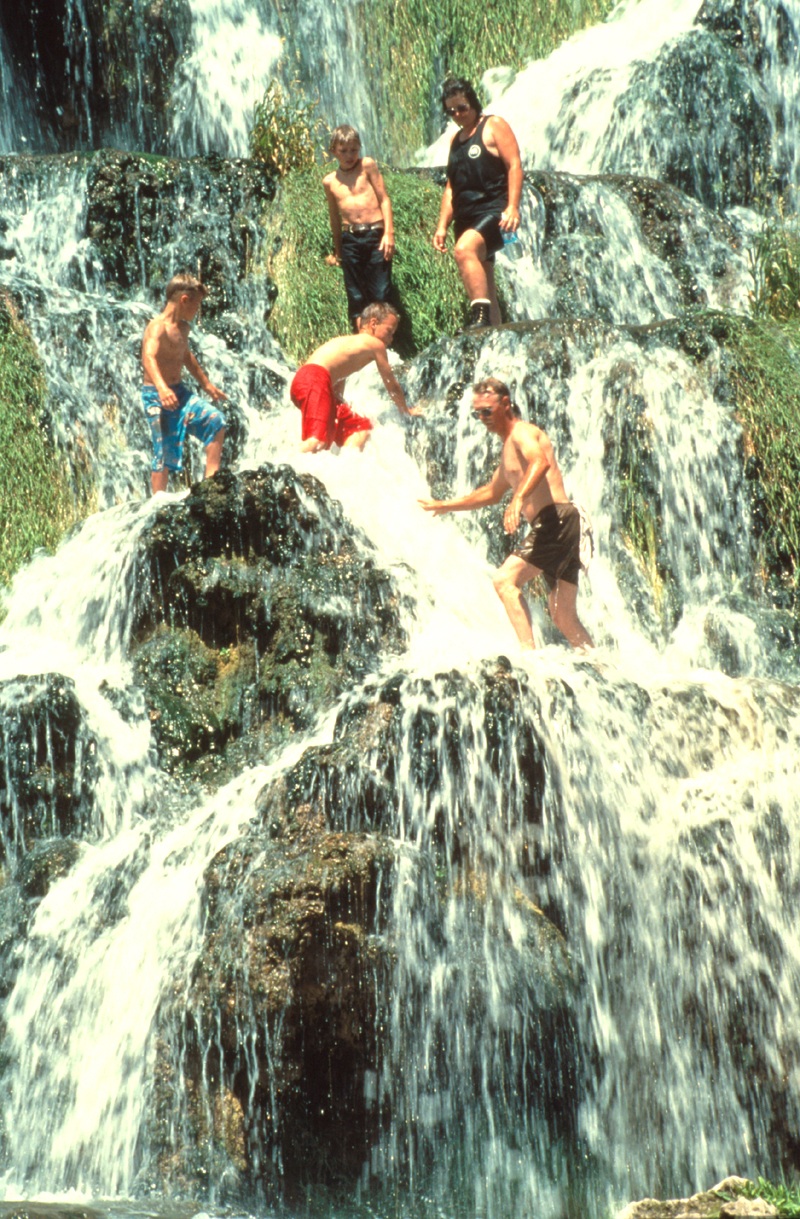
Fall Creek Falls Snake River Canyon